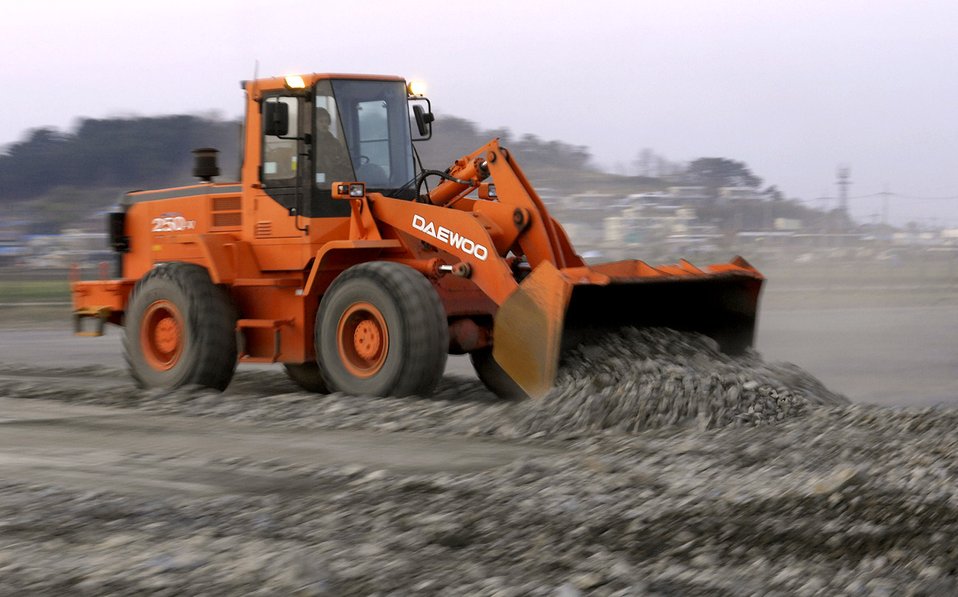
Repair team keeps Kunsan mission going

A member of the 8th Civil Engineer Squadron Airfield Damage Repair team clears debris from the runway surface April 19 at Kunsan Air Base, South Korea. Kunsan AB is currently undergoing an Operational Readiness Inspection to test the 8th Fighter Wing's ability to conduct its wartime mission. During exercises, ADR teams perform several functions including crater repair after simulated attacks and airfield lighting during simulated power outages, making it possible to get aircraft back in the air quickly.